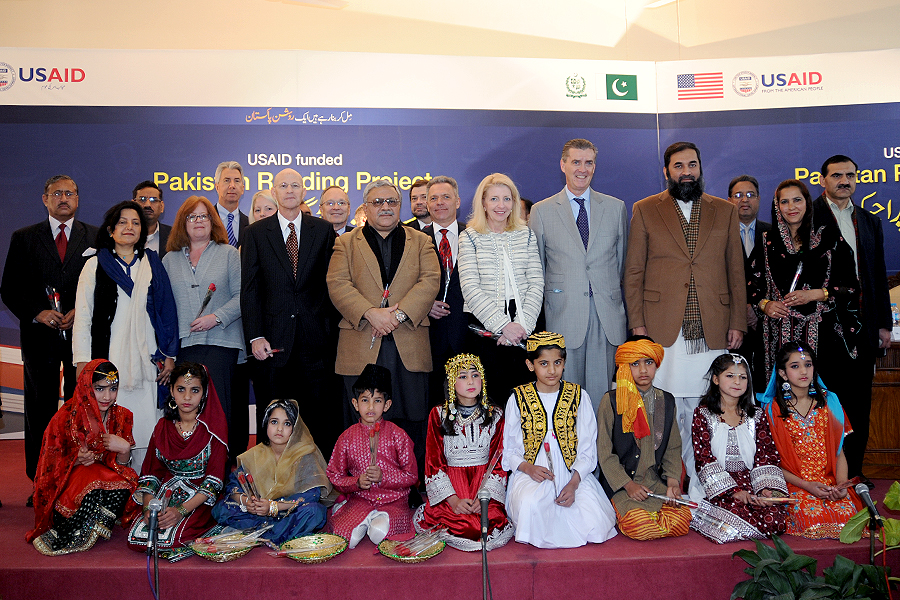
United States and Pakistan Launch the Pakistan Reading Project